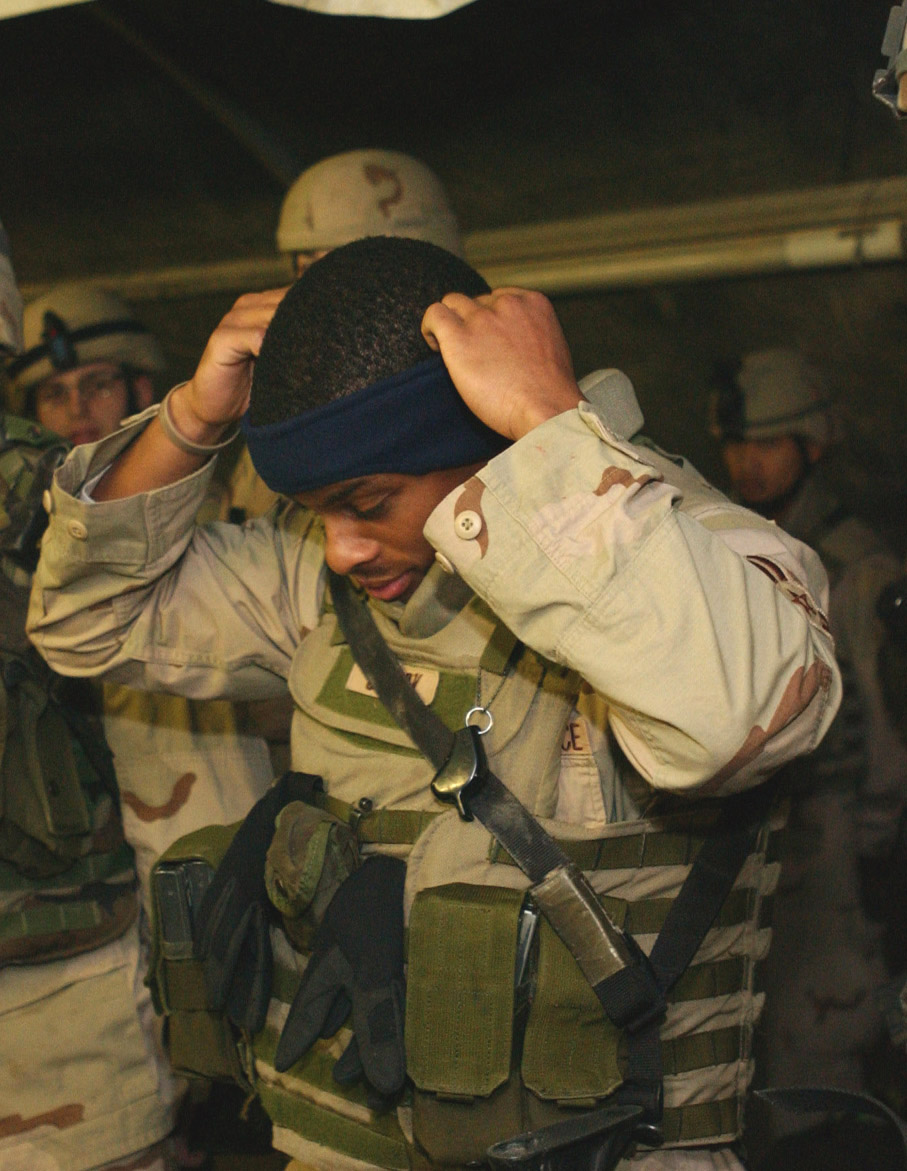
Family, friends send Arizona heat to deployed Airmen

060129-F-6878W-008
KIRKUK AIR BASE, Iraq (AFPN) -- Airman 1st Class Steven Cherry puts on a donated headband with built-in ear protectors before going out on patrol. The headbands were donated to 506th Expeditionary Security Forces Squadron by family members of Tech. Sgt. Max Quitiquit from the 506th Expeditionary Logistic Readiness Squadron.